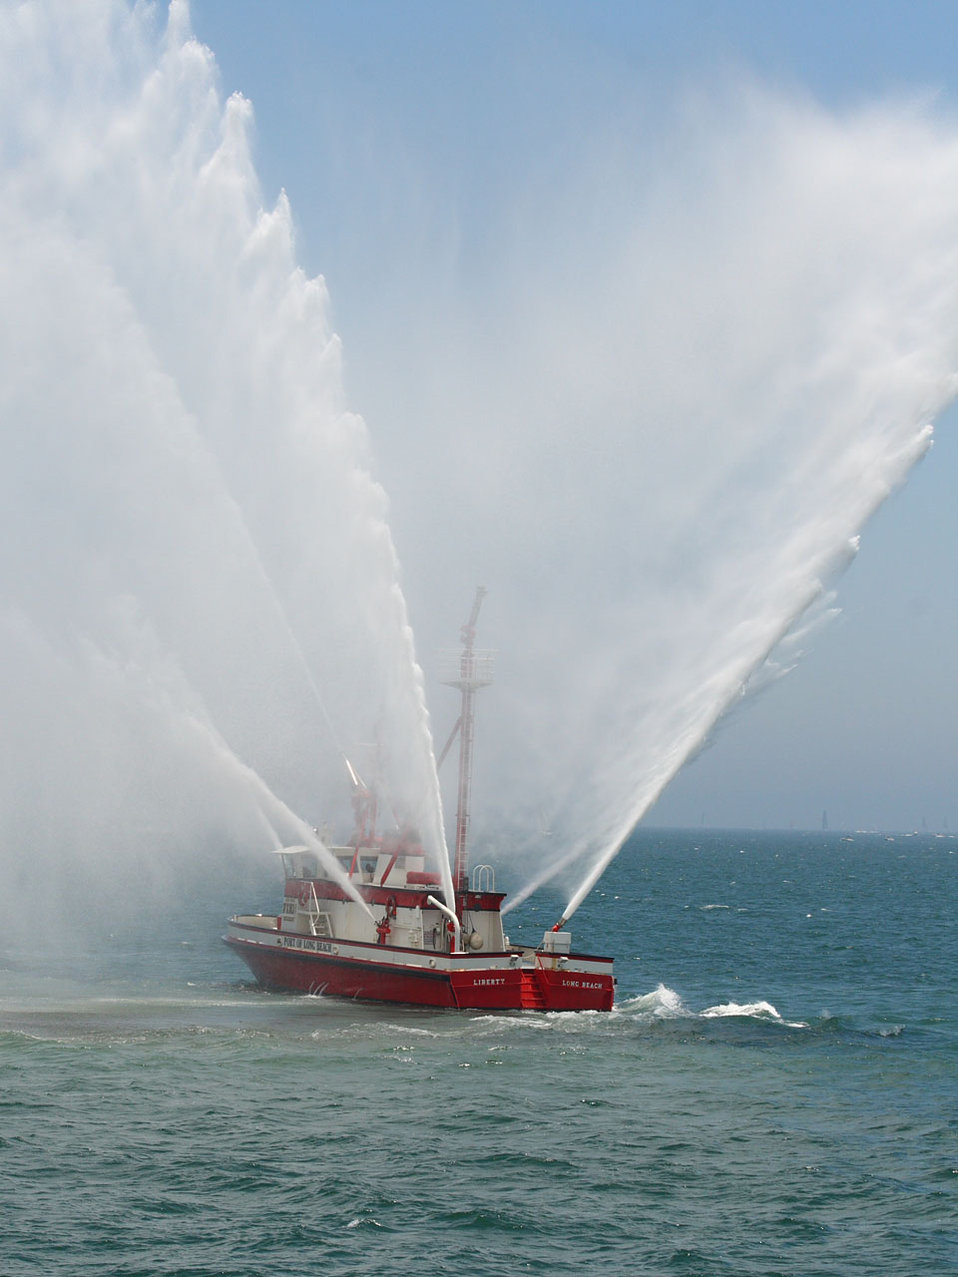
Harbor fire vessel

Long beach harbor fire vessel displays water pumping power.